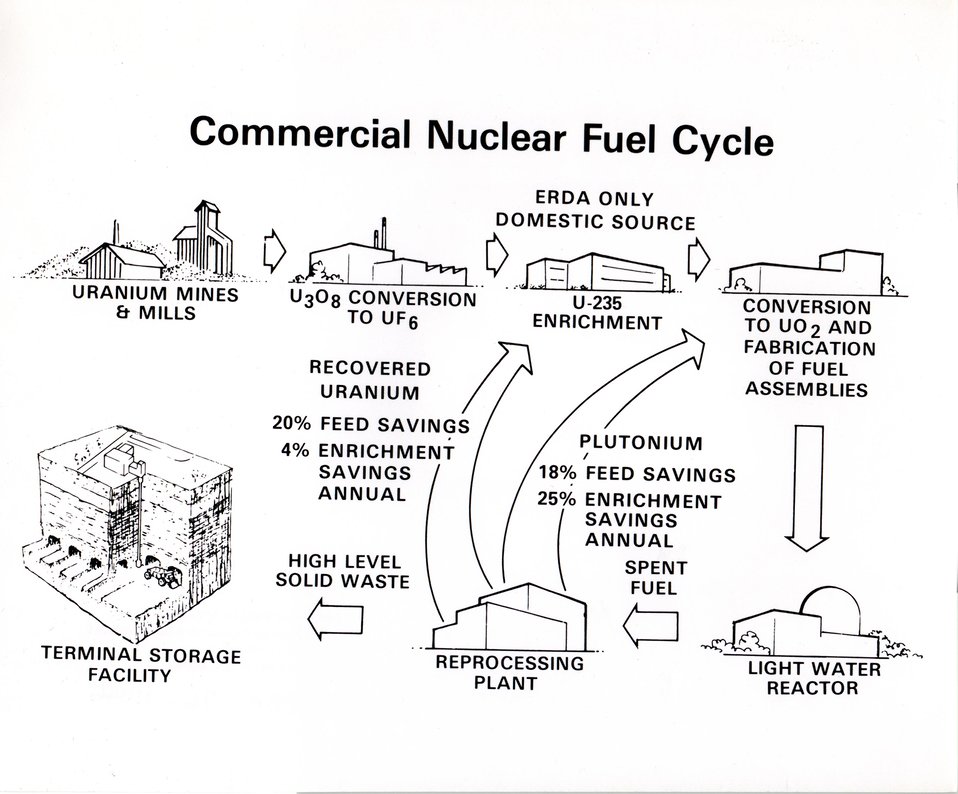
No caption. c. 1976